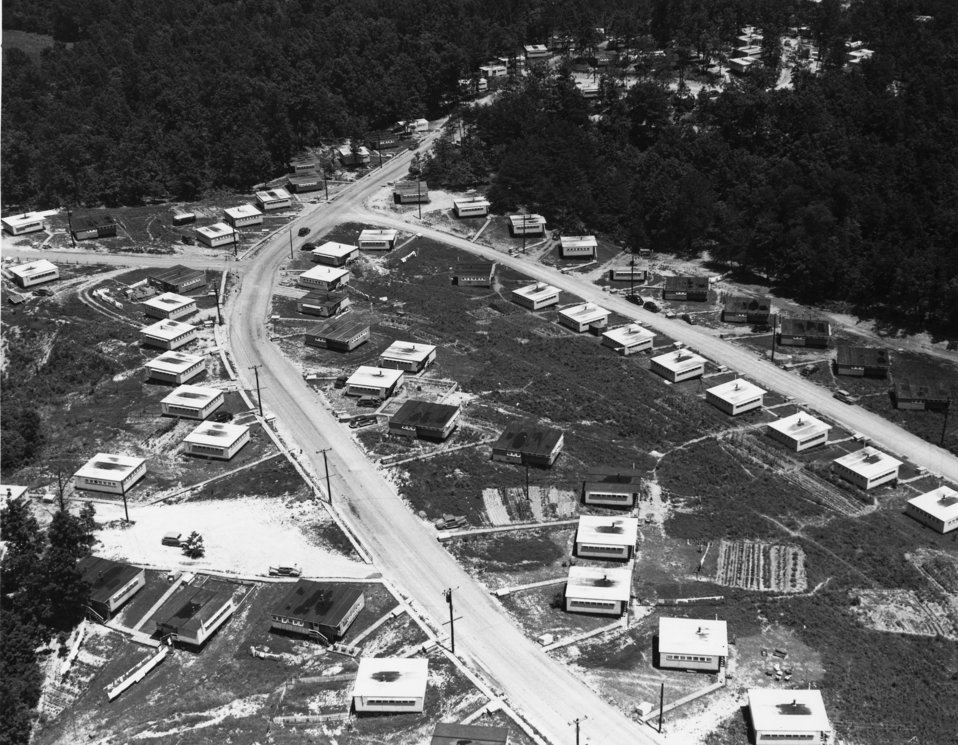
Aerial of Oak Ridge